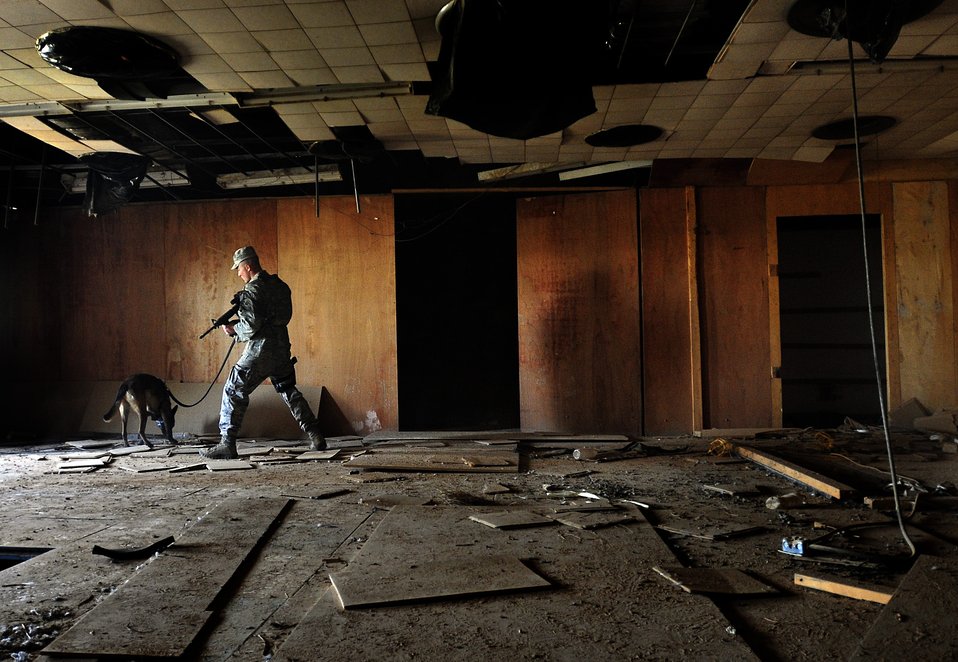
An Airman's Best Wingman

Senior Airman Stephen Hanks, 447th Expeditionary Security Forces Squadron military working dog handler, and Geri, 447th ESFS patrol and explosive detector dog, secure an abandoned building on a routine patrol by checking the location for explosives or squatters on Sather Air Base in Baghdad, Iraq, Dec. 11, 2011. For the last six months Geri and Hanks, have been supporting Operation New Dawn by providing explosive and psychological deterrence. Hanks and Geri are deployed from Patrick Air Force Base, Fla. Hanks is from Amherst, Mass.